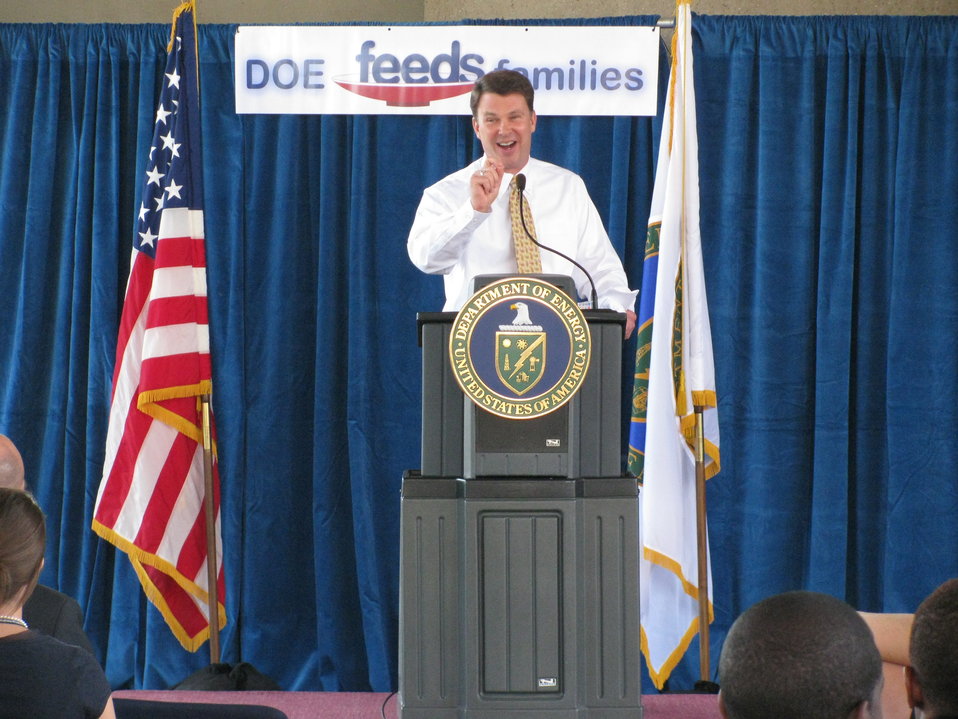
Feds Feed Families 3

Director of White House Office of Personnel Management, John Berry